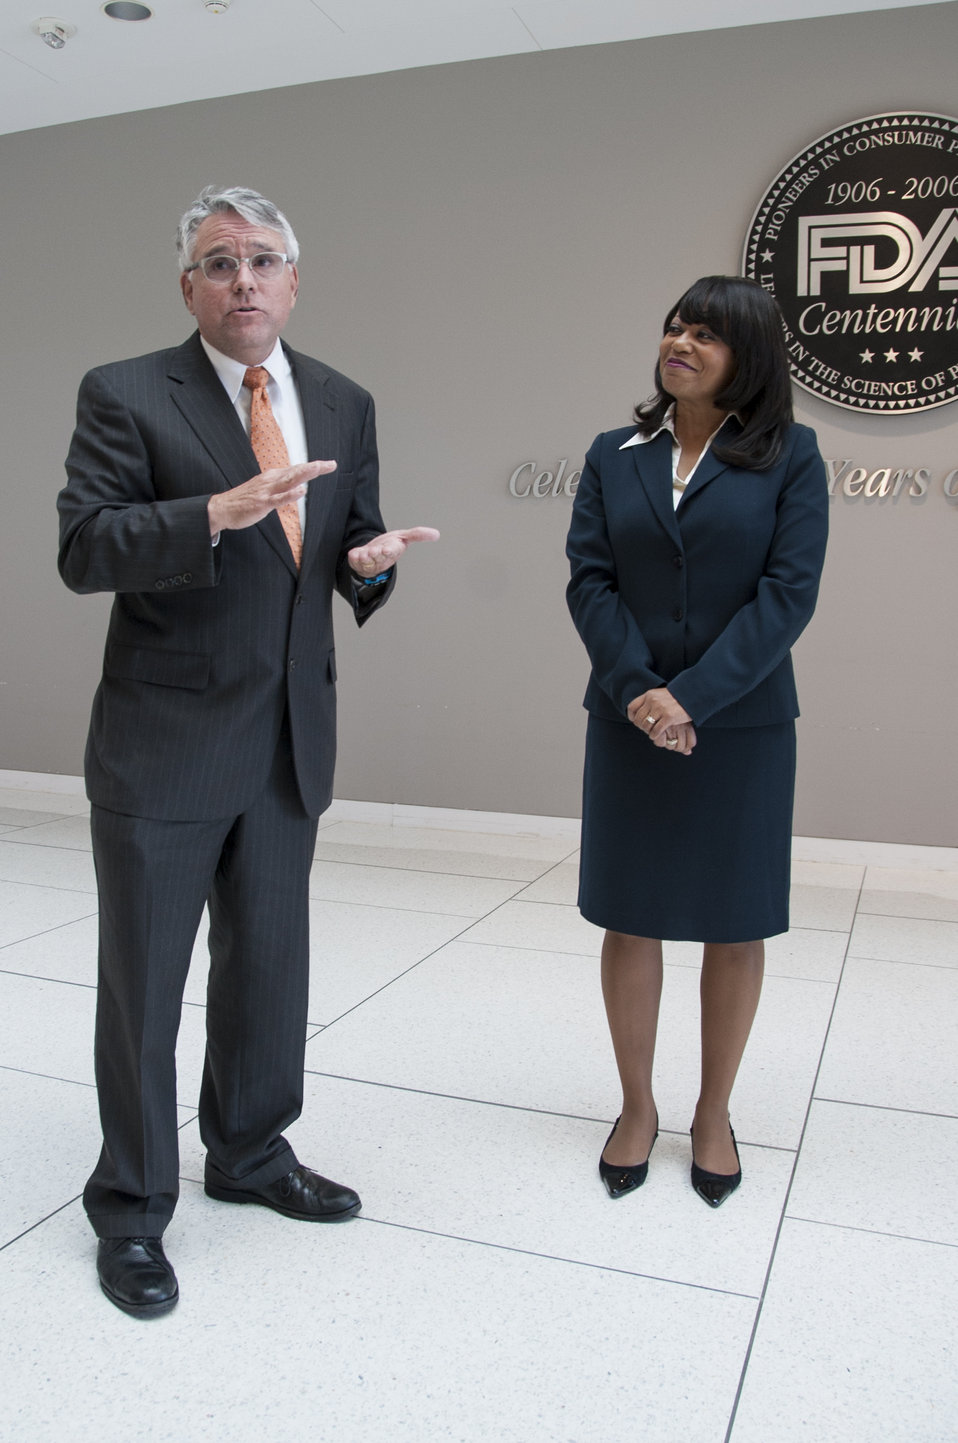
AOA Leadership Award - 9833

Nov. 18, 2013; Michael Duenas, The American Optometric Association (AOA) Chief Public Health Officer (left) expressed thanks to Helene Clayton-Jeter (right) prior to her receiving the 2013 AOA Leadership in Public Health Award for her hard work and success in advancing innovative and effective public health policy solutions, and for helping safeguard the health of the American people.

For more information on Helene's award, read this FDA Voice blog post: blogs.fda.gov/fdavoice/index.php/2013/12/a-vision-worth-h...

This photo is free of all copyright restrictions and available for use and redistribution without permission. Credit to the U.S. Food and Drug Administration is appreciated but not required. Privacy and use information: www.flickr.com/people/fdaphotos/